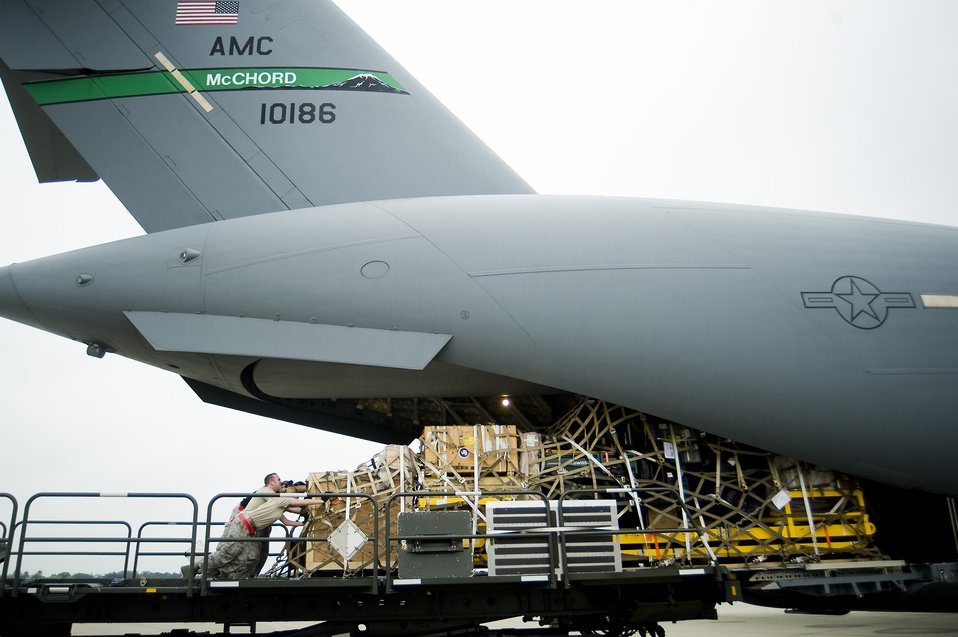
Deep Freeze